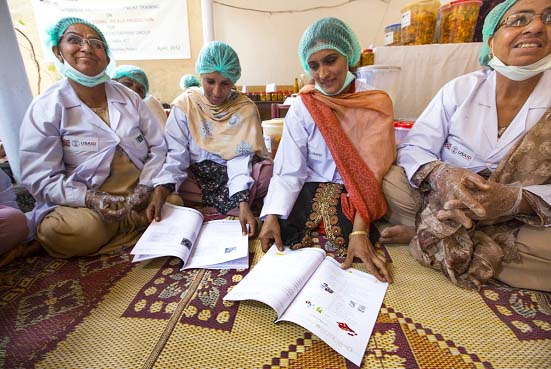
USAID's Agribusiness Project Women FEG for Food Processing - Pickle Production at Village Jabbi

The USAID funded trainings for the women entrepreneurs had three parts. First, a four-day Enterprise Development Training taught basic business skills such as bookkeeping and market analysis, including trips to local markets to determine supply, demand and pricing for various types of pickles.
www.usaid.gov/pk/db/sectors/growth/project 750.html